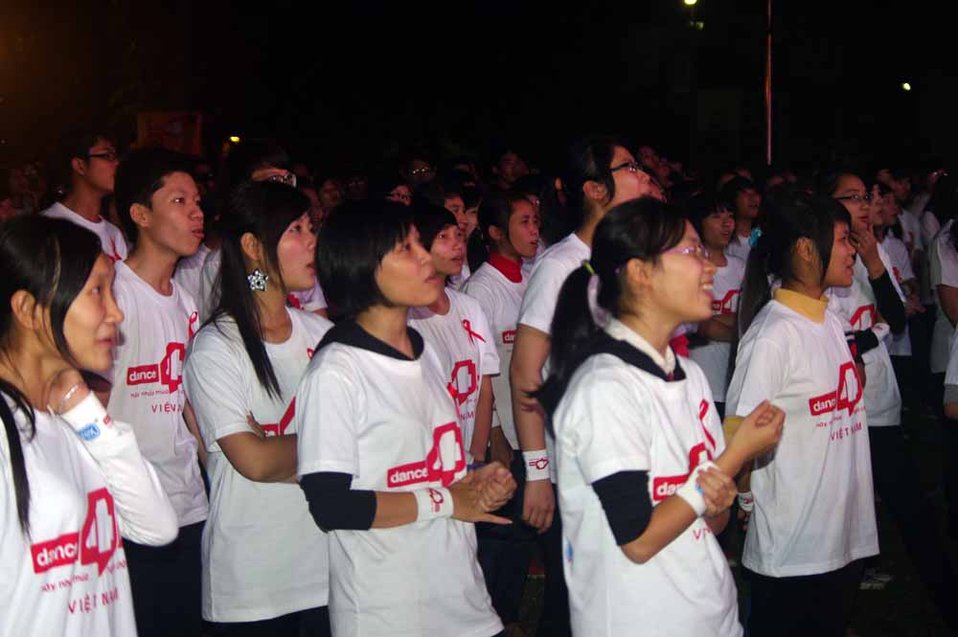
dance4life, Hanoi